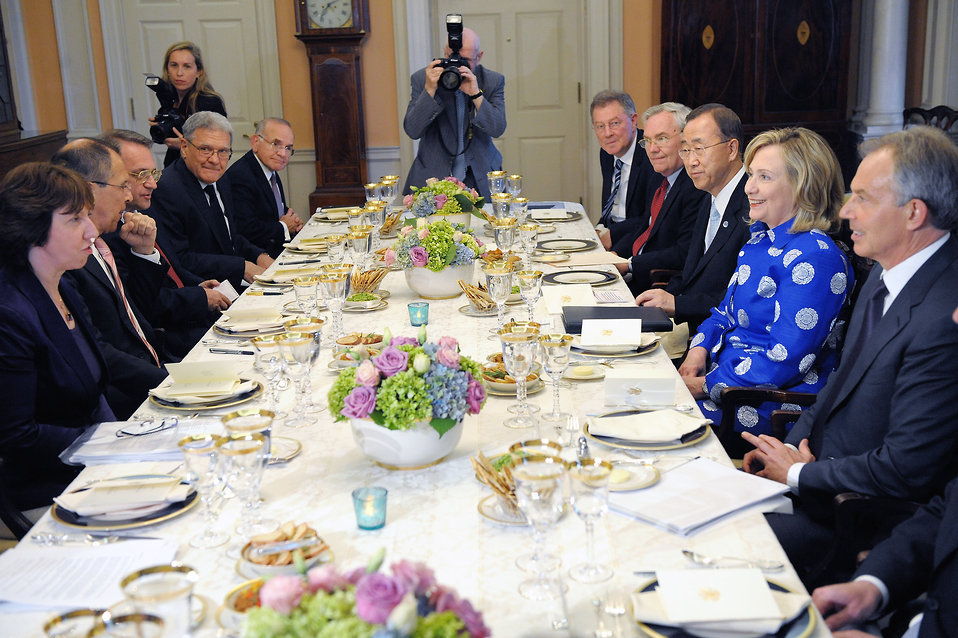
Secretary Clinton Hosts a Working Dinner With UN Secretary General Ban Ki-Moon, Russian Foreign Minister Lavrov, EU High Representative Ashton, and Quartet Representative Blair

U.S. Secretary of State Hillary Rodham Clinton hosts a working dinner with UN Secretary General Ban Ki-Moon, Russian Foreign Minister Lavrov, EU High Representative Ashton, and Quartet Representative Tony Blair at the U.S. Department of State in Washington, D.C., on July 11, 2011.